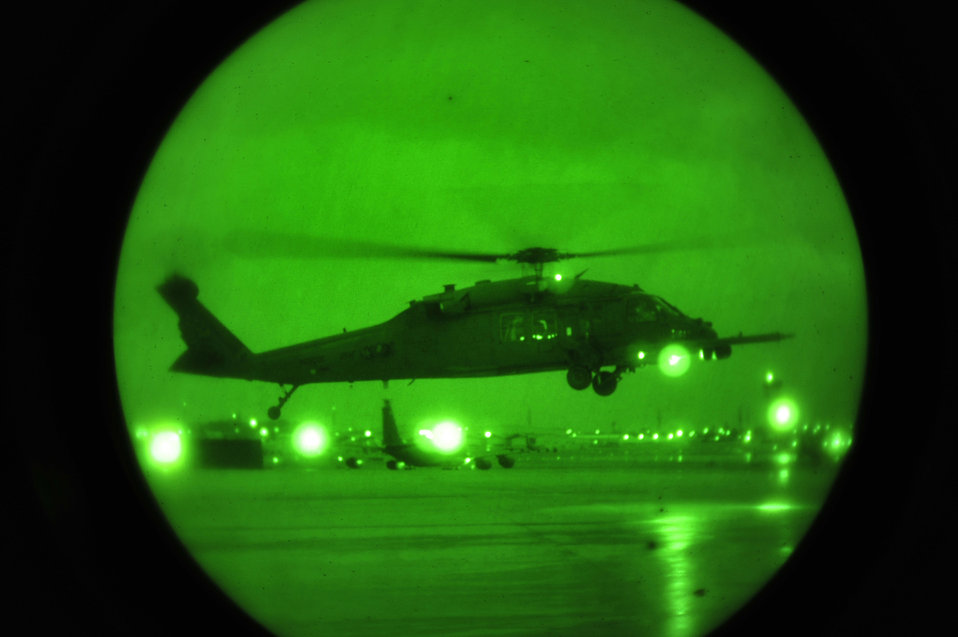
33rd RQS head to Mainland for search and rescue

An HH-60 Pavehawk carrying members from the 33rd Rescue Squadron take-off for mainland Japan to assist in search and rescue, here at Kadena Air Base, March 13. Along with 33rd RQS members, 100 plus Kadena members will be providing medical attention and assistance with restoring electric power in support of disaster relief subsequent Friday?s earthquake and tsunami.